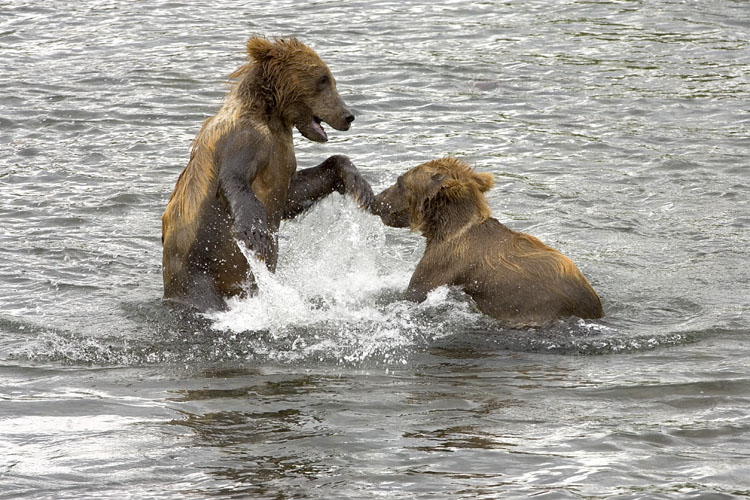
KOD Hildebrand (30)

Kodiak National Wildlife Refuge- Wildlife